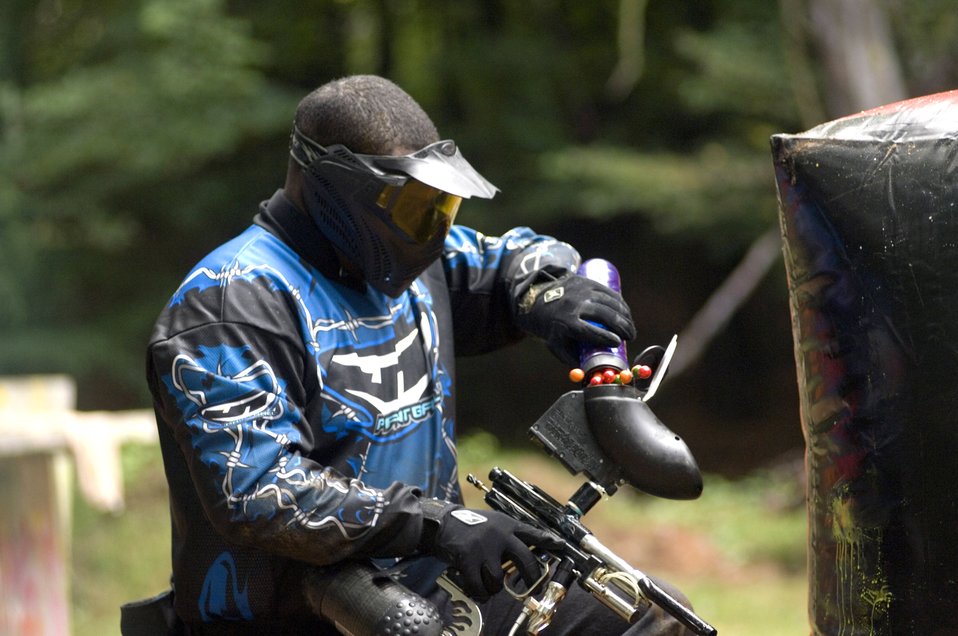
Paint 'em up

PULASKI BARRACKS, Germany -- Staff Sgt. Chris Matthews reloads paintballs during a competition here. Two three-person teams squared off against each other from opposite ends of an enclosed area with obstacles between them during a three-minute contest. Fifteen American and German teams participated in the competition. Sergeant Matthews is a jet engine mechanic with the 52nd Component Repair Squadron at Spangdahlem Air Base, Germany.